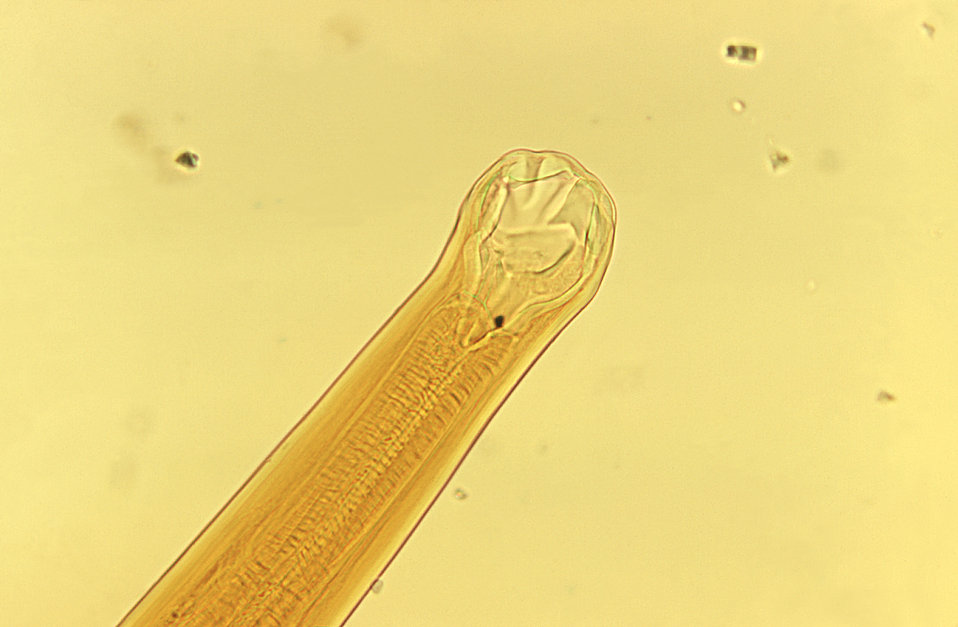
Ancylostoma braziliense mouth parts.